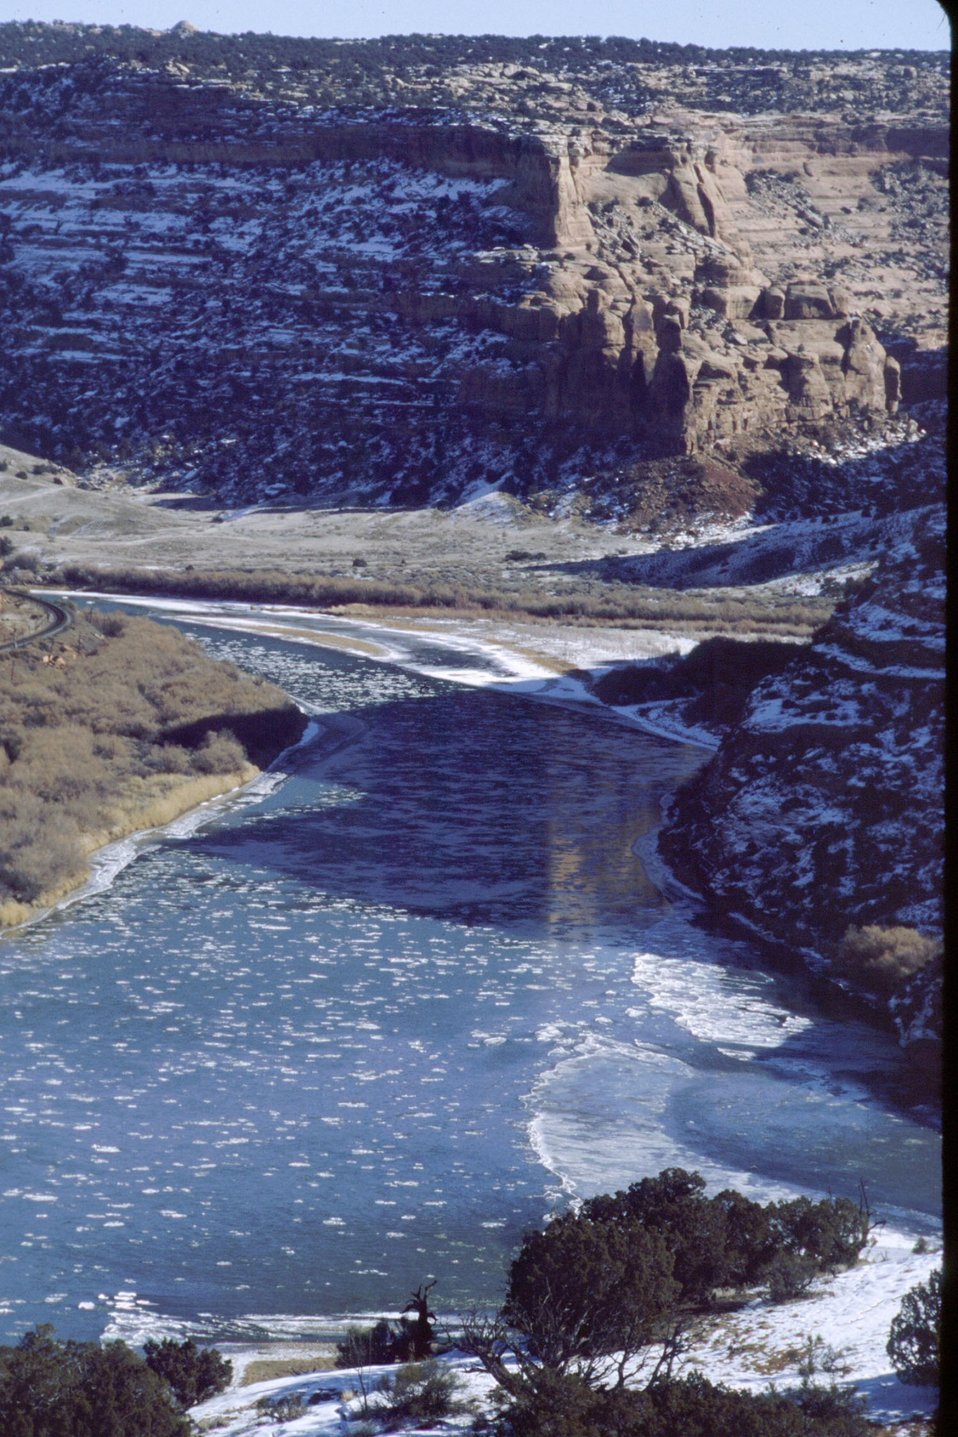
Colorado River in Ruby Canyon